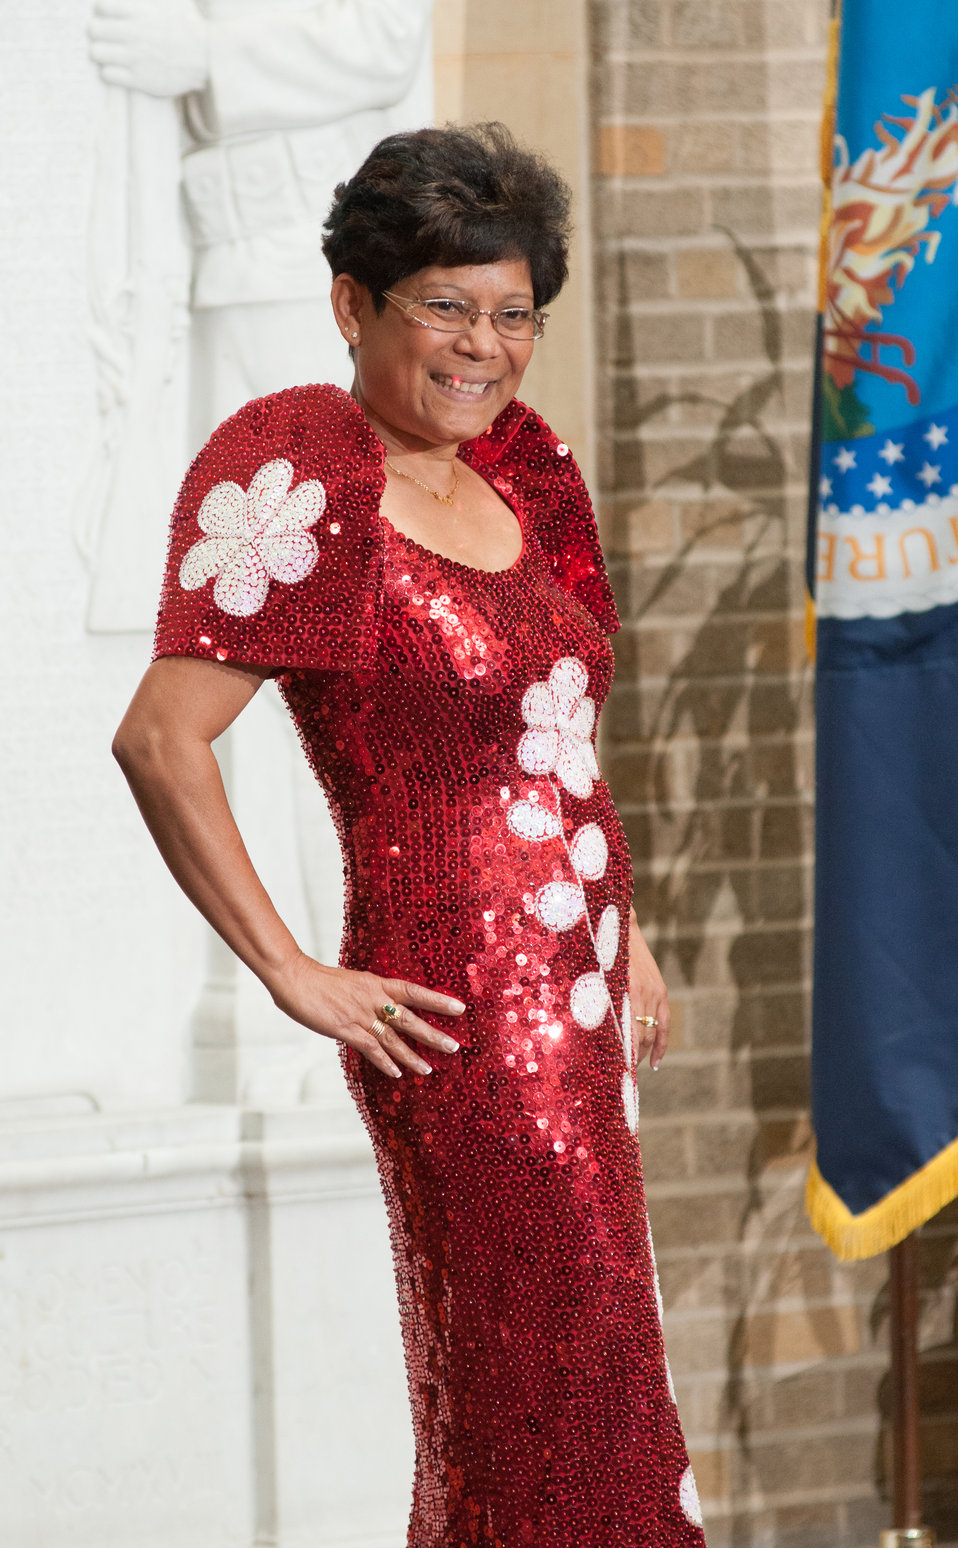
Traditional clothing from various Asian countries were demonstrated during this show of clothing, part of the U.S. Department of Agriculture (USDA) Asian Pacific American Heritage Month Observance program, at the USDA headquarters, Whitten Building patio, in Washington, D.C., on Thursday, May 23, 2013. This year’s theme is “Building leadership; Embracing the Cultural Values and Inclusions.”